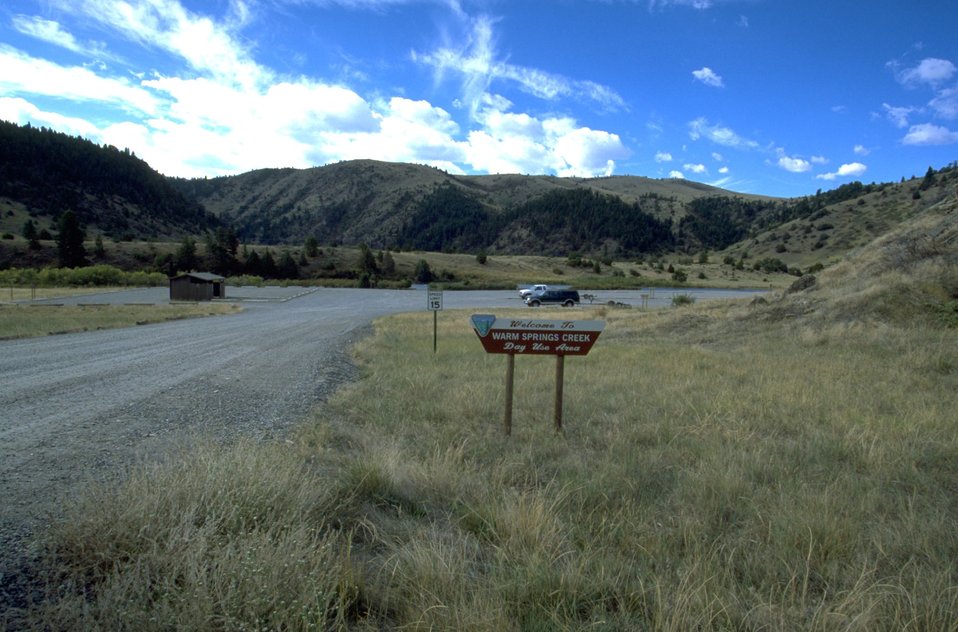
The Parking Lot and Outhouse at Warm Springs Creek